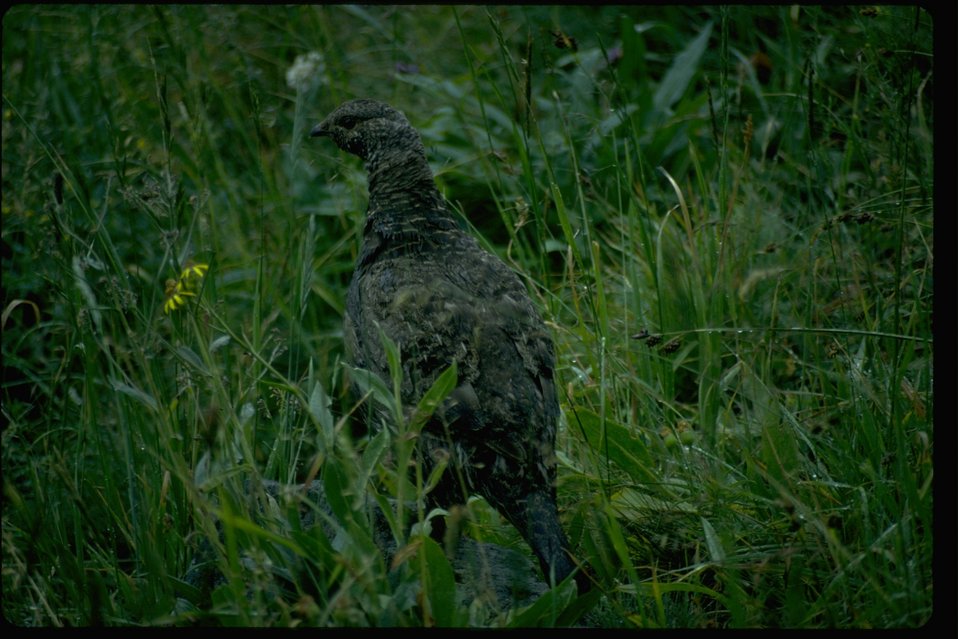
Blue Grouse standing in the grass.